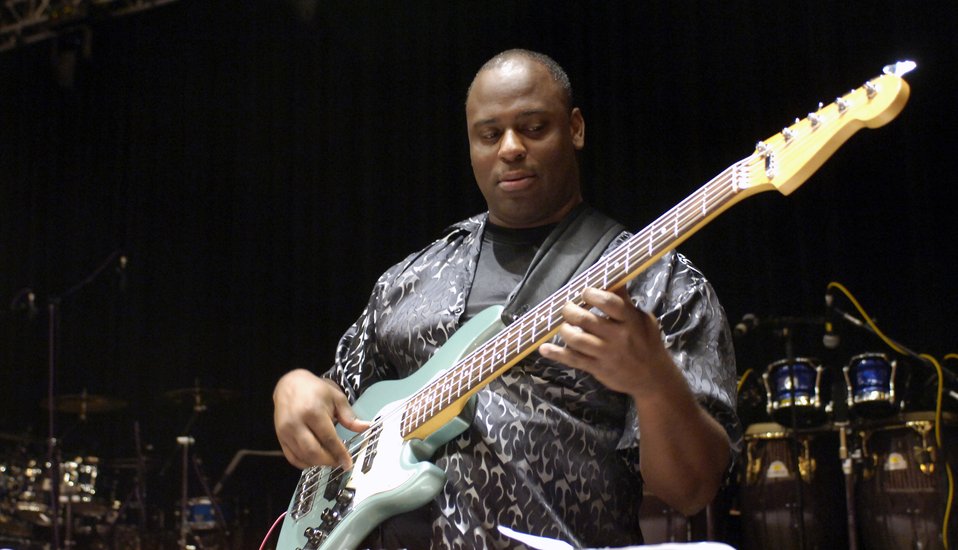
Sergeant takes Anti-drug battle personally

Staff Sgt. Terry Grace, bassist with Reserve Generation, plays for third through seventh grade students attending an anti-drug concert Oct. 25 at Trinity University in San Antonio. The concert was part of National Red Ribbon Week, an anti-drug campaign focused on educating individuals, families and communities on the destructive effects of drugs and the positive alternative life choices that are available to youth. The 2006 Red Ribbon Week runs from Oct. 23 to 29. Reserve Generation is part of the Air Force Reserve Command Band at Robins Air Force Base, Ga.